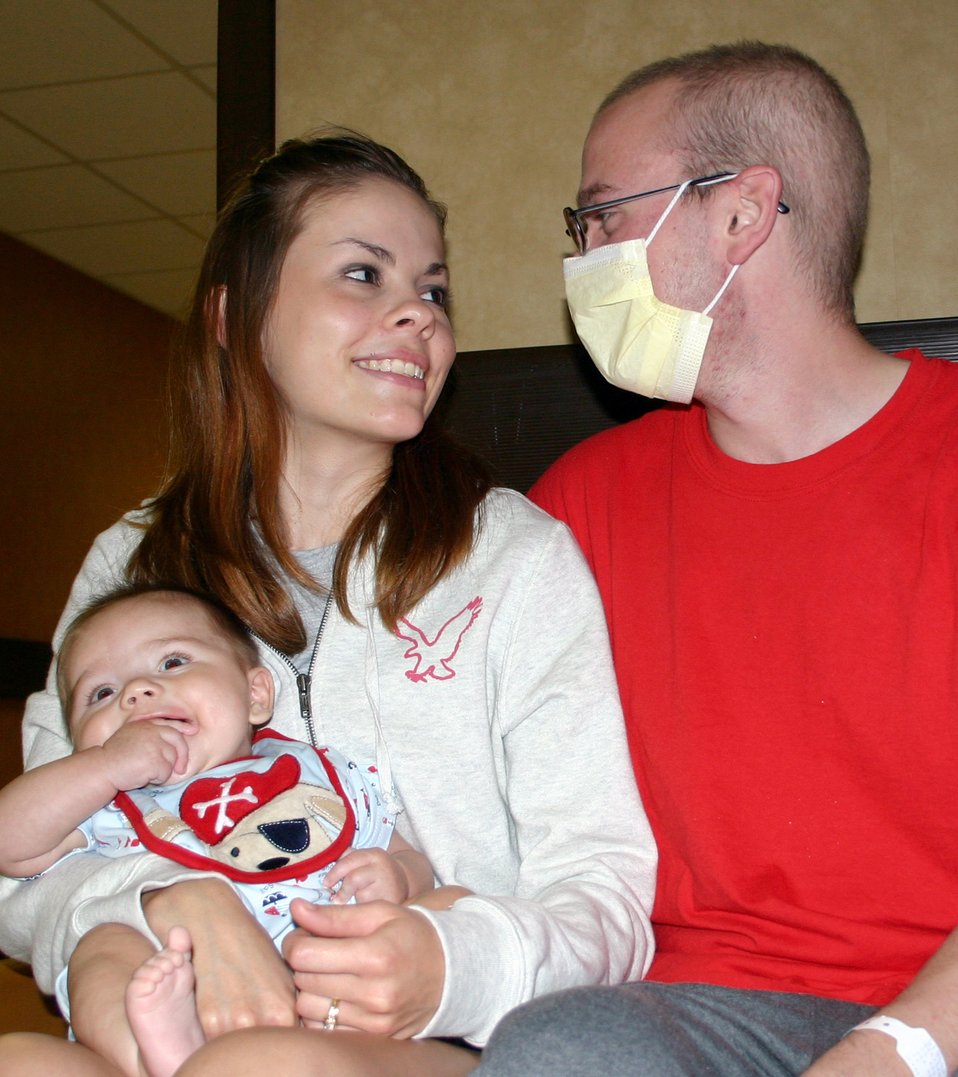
From Iraq to Wilford Hall, nurse, patient meet again

Army Sgt. Joe DeLashmutt visits with his wife, Melissa, and son, Austin, at the Fisher Bone Marrow Transplant Unit at Wilford Hall Medical Center at Lackland Air Force Base, Texas, on July 10. Sergeant DeLashmutt was diagnosed with leukemia while deployed to Iraq. He is wearing a surgical mask and is not able to hold his son until the new marrow he received has replenished his immune system.